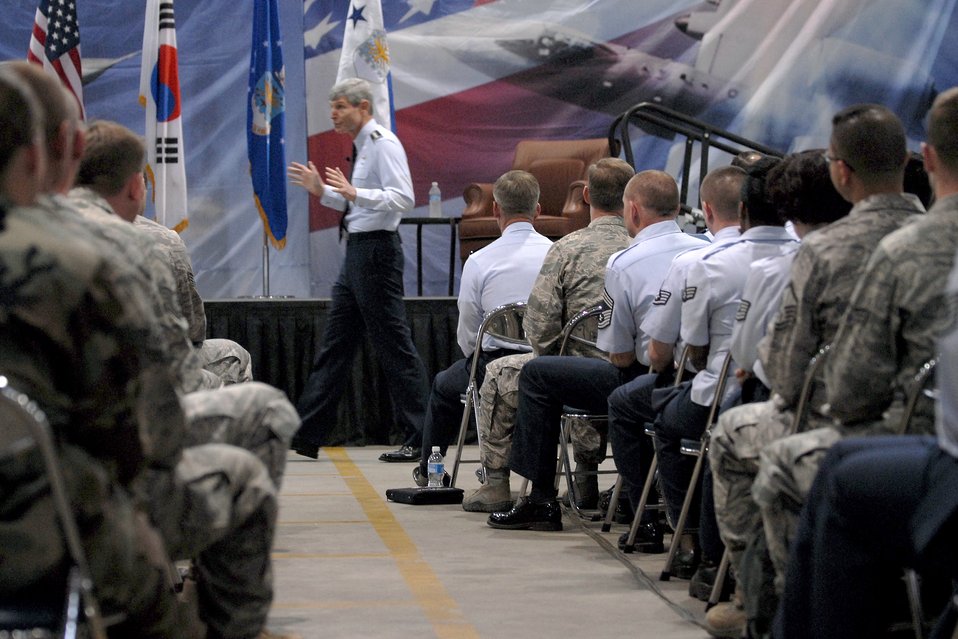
CSAF visits Osan Air Base, South Korea

Air Force Chief of Staff Gen. Norton Schwartz talks with Airmen during an Airman's Call May 11 at Osan Air Base, South Korea. General Schwartz was there as part of his Pacific Air Forces tour, visiting and talking to Airmen.